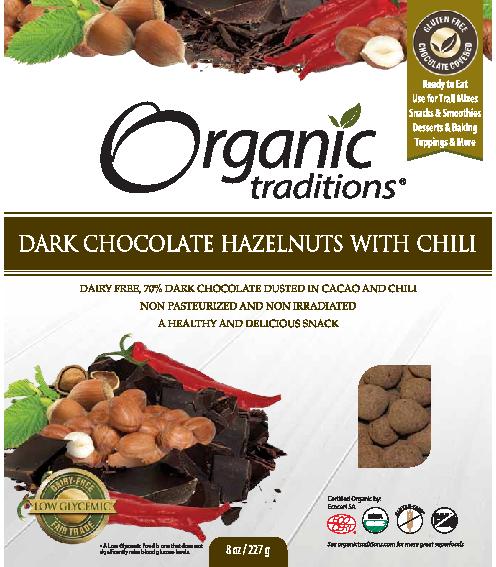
ChocHazelnutsChili 227g US Front LR